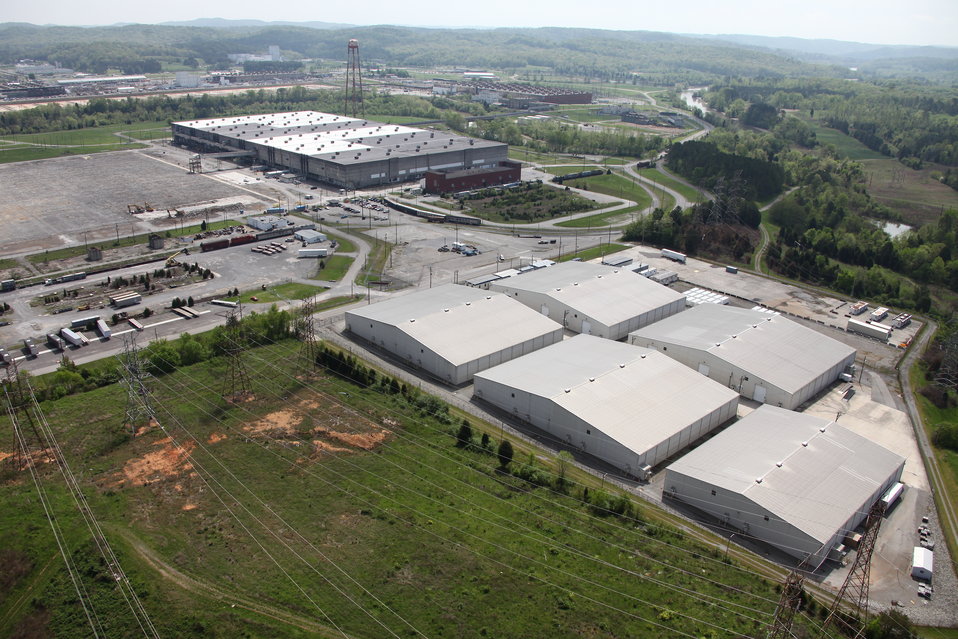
ETTP